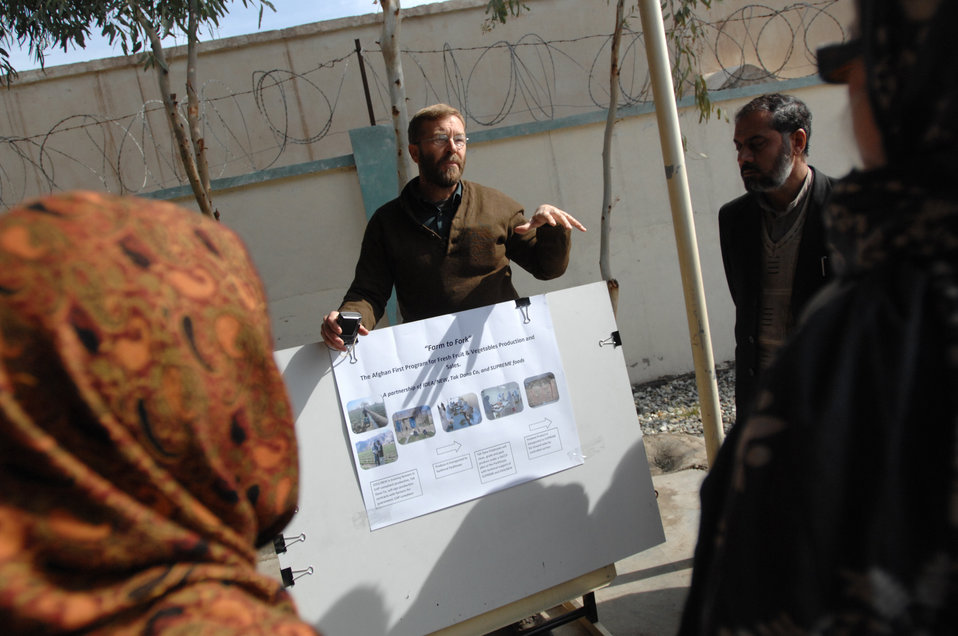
110209sv Shah208

United States Agency for International Development (USAID) at the Surkh Rod vegetable packing facility in Nangarhar province on Wednesday, February 9, 2011. (S.K. Vemmer/Department of State)